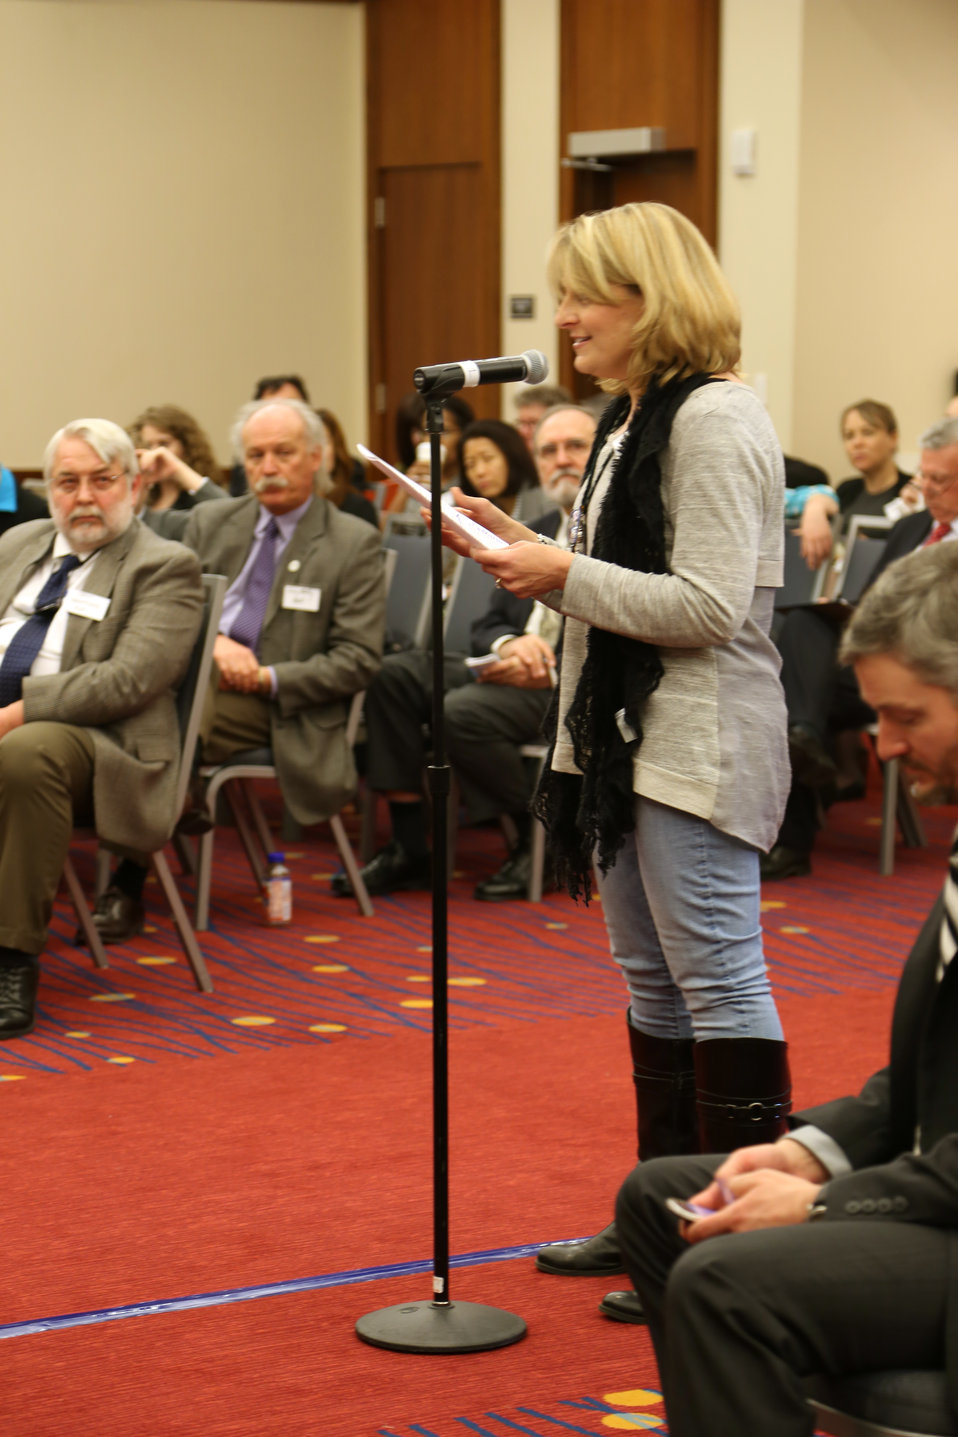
Wildlife Trafficking Advisory Council Meeting March 20, 2014